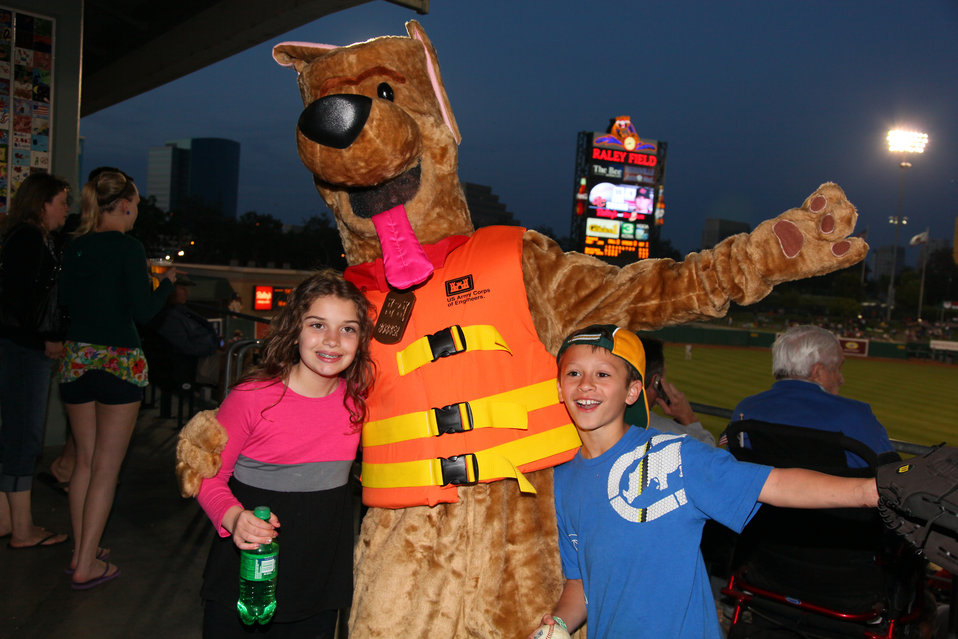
Bobber shares water safety tips with River Cats fans.

U.S. Army Corps of Engineers water safety mascot Bobber the Water Safety Dog mugs with fans during a Sacramento River Cats baseball game June 10, 2011 in West Sacramento, Calif. Bobber was on hand to share water safety tips and to celebrate the U.S. Army’s 236th birthday.